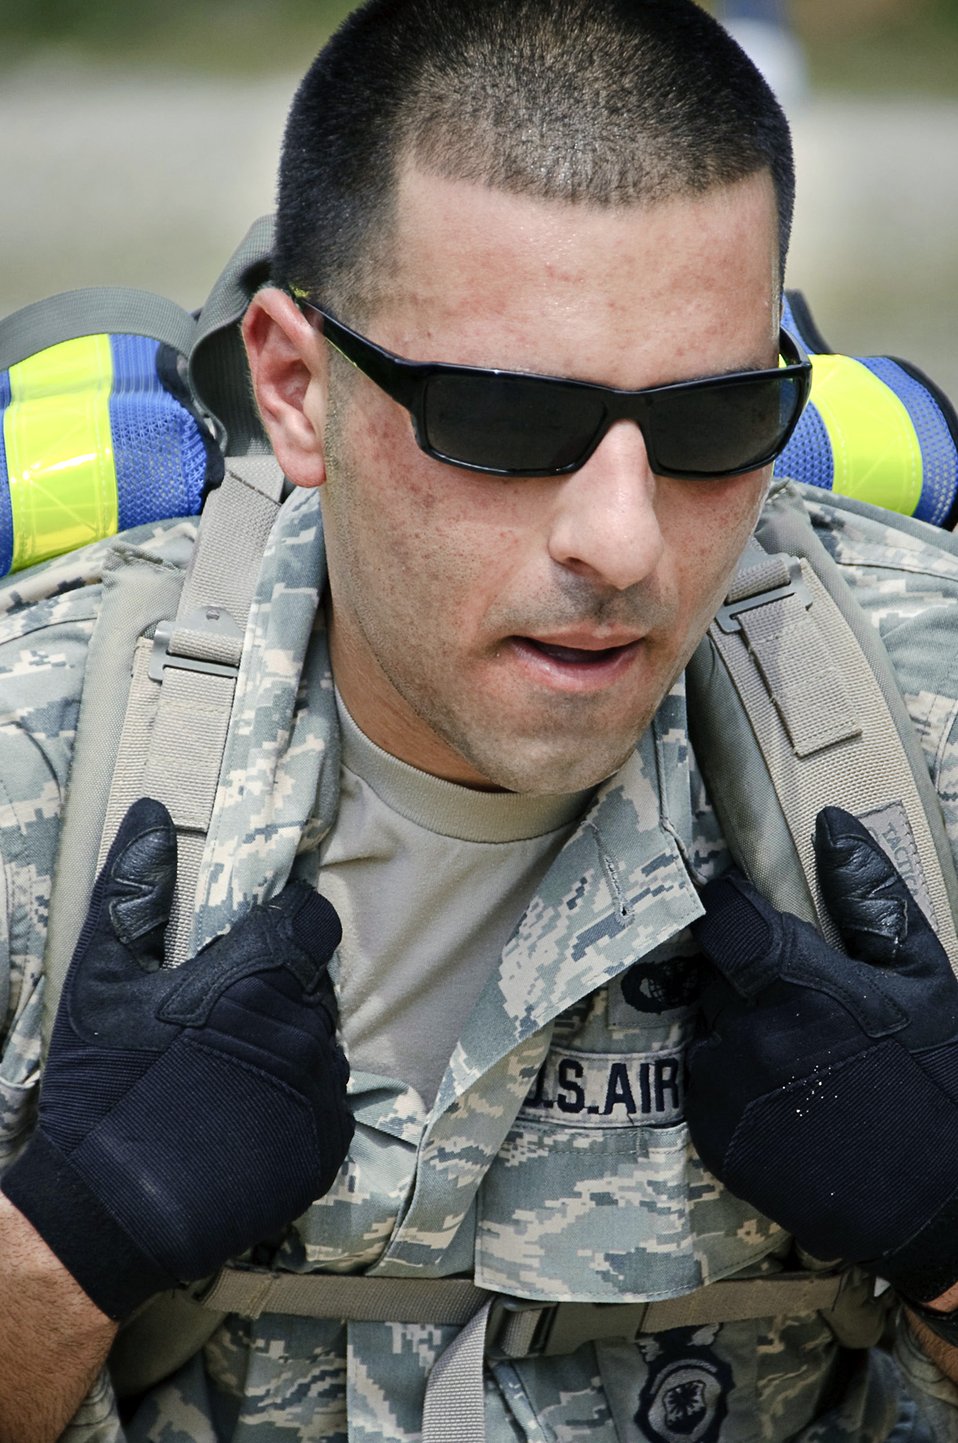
National Police Week 2010

Staff Sgt. Derek Adas stabilizes his pack while climbing uphill during the obstacle course and ruck march event held May 12, 2010, at Camp Bullis, Texas, during National Police Week. The event was sponsored by Joint Base San Antonio installations and open to all area police organizations. Sergeant Adas is assigned to the 902nd Security Forces Squadron at nearby Randolph Air Force Base.